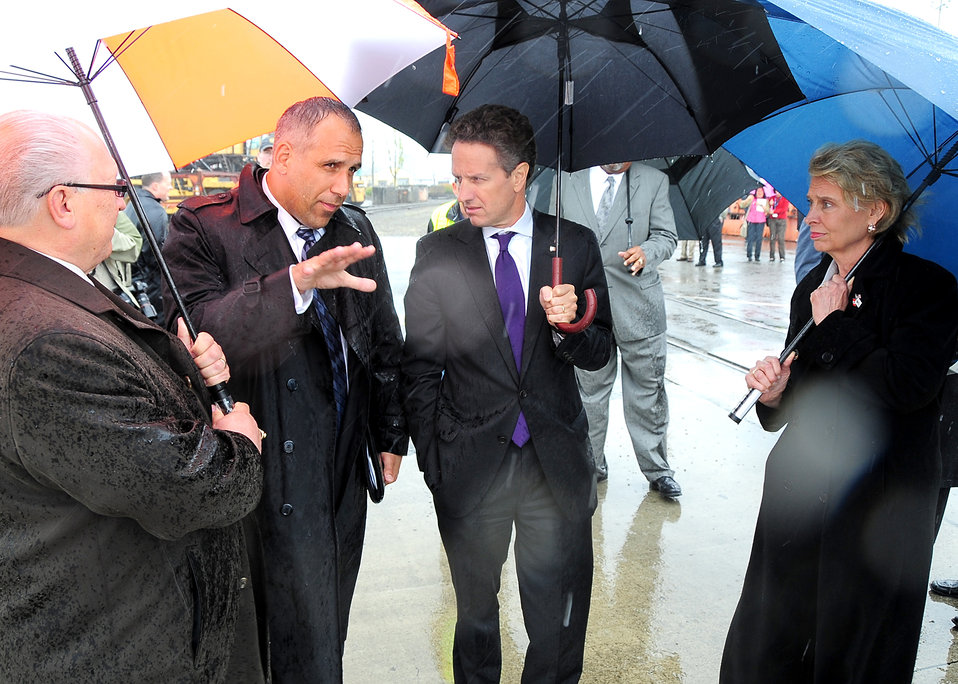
Tacoma, 5/18/2010

Secretary Geithner and WA Governor Gregoire on a dockside walking tour of the Port of Tacoma with port officials.